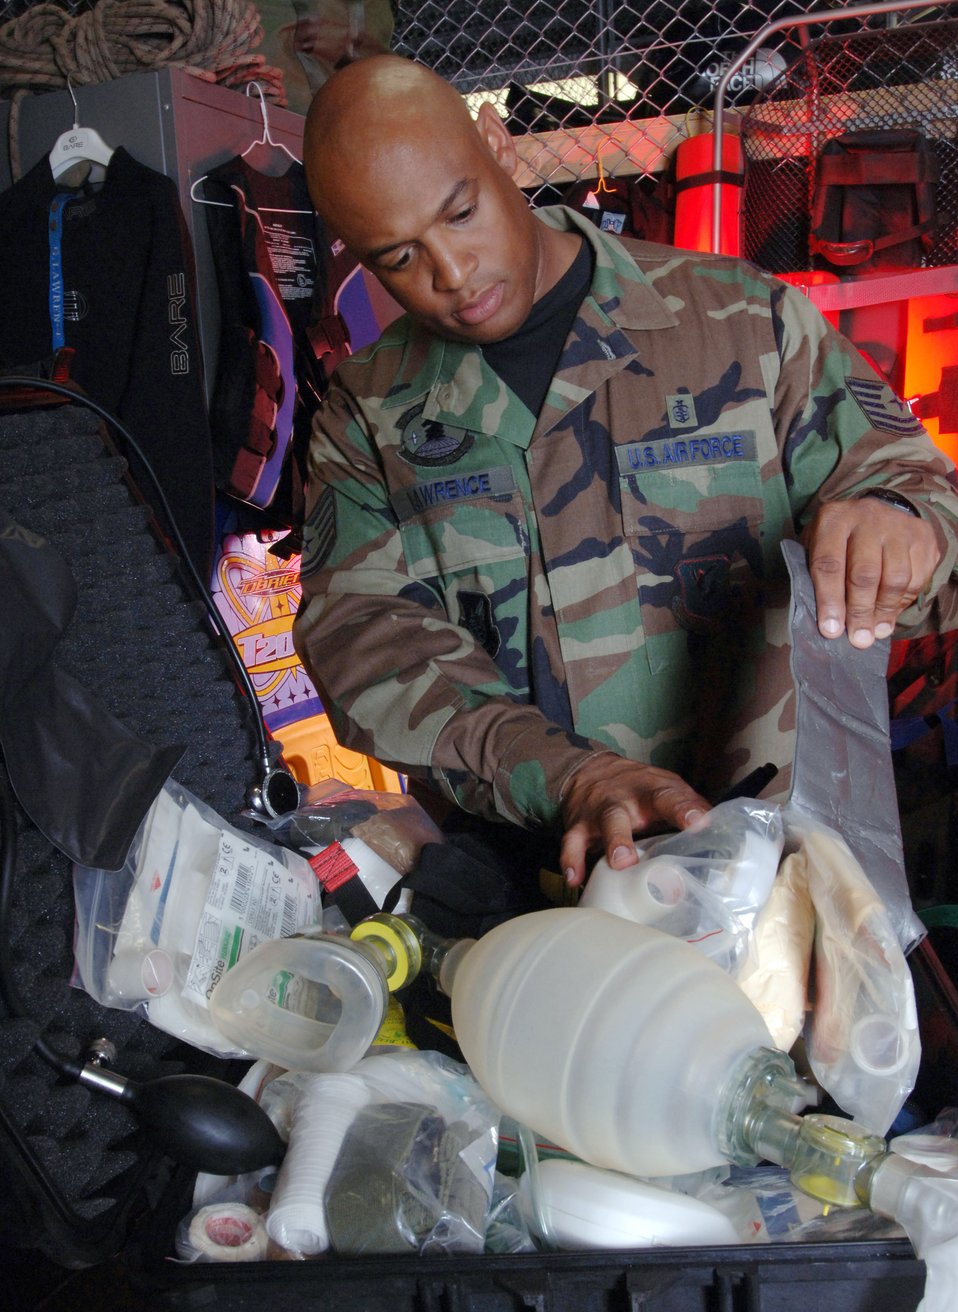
Medical inspection

KADENA AIR BASE, Japan -- Tech. Sgt. Gerry Lawrence inspects medical equipment used by pararescuemen with the 31st Rescue Squadron Airmen during water and ground training here. He is assigned to the squadron's medical element.